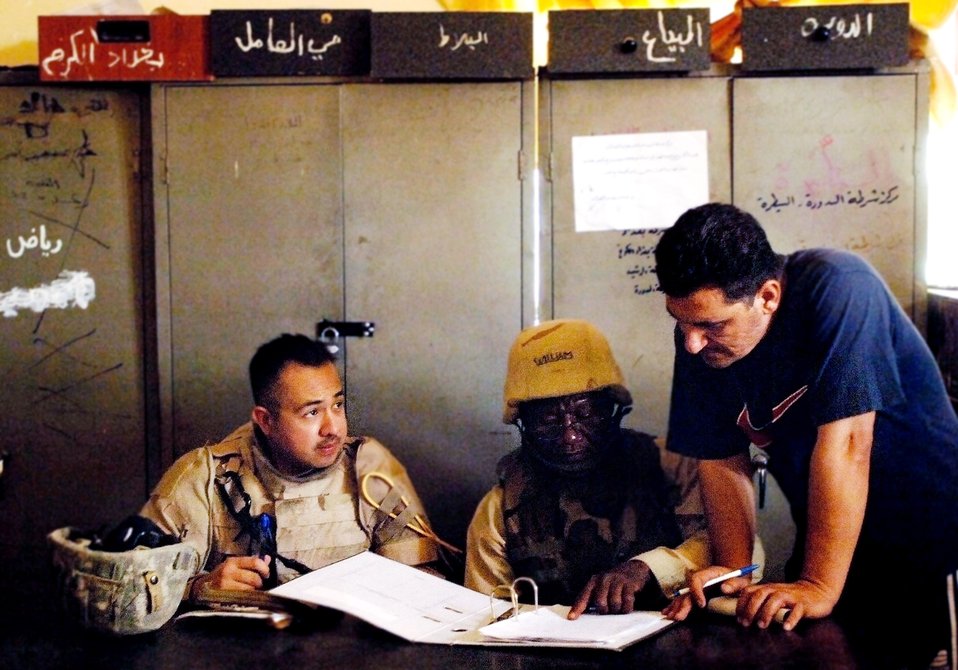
Dangerous road to progress

Staff Sgt. Christoper Aguirre discusses investigative reports with an Iraqi police official May 9 in a Baghdad police station. Memmbers of Det. 3, 732nd Expeditionary Security Forces Squadron, perform police transition team duties of mentoring, coaching and teaching Iraqi police.